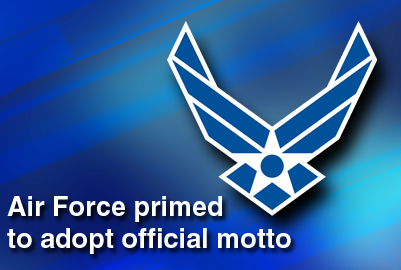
Air Force motto